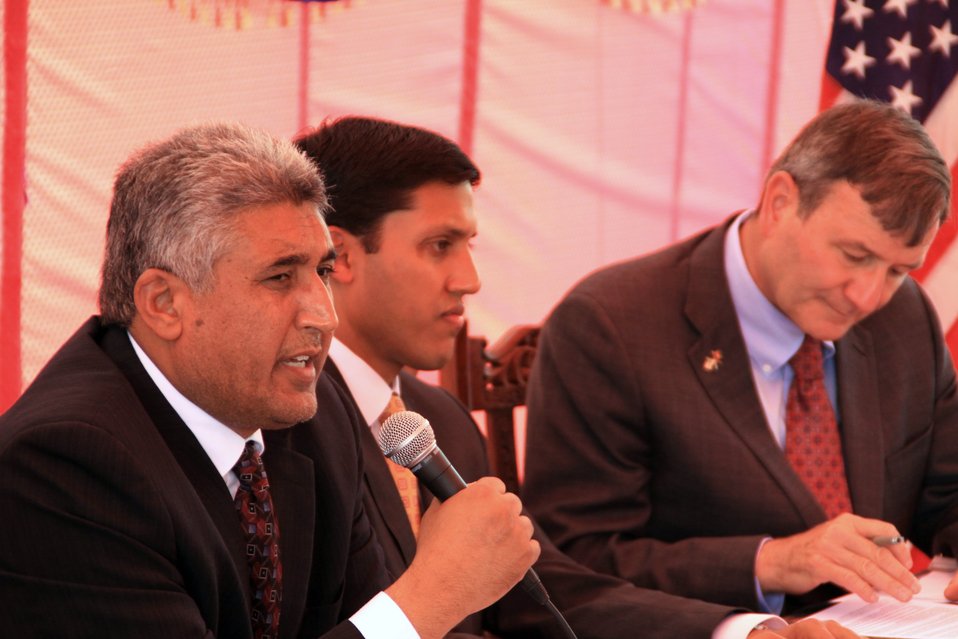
Badam Bagh Farm